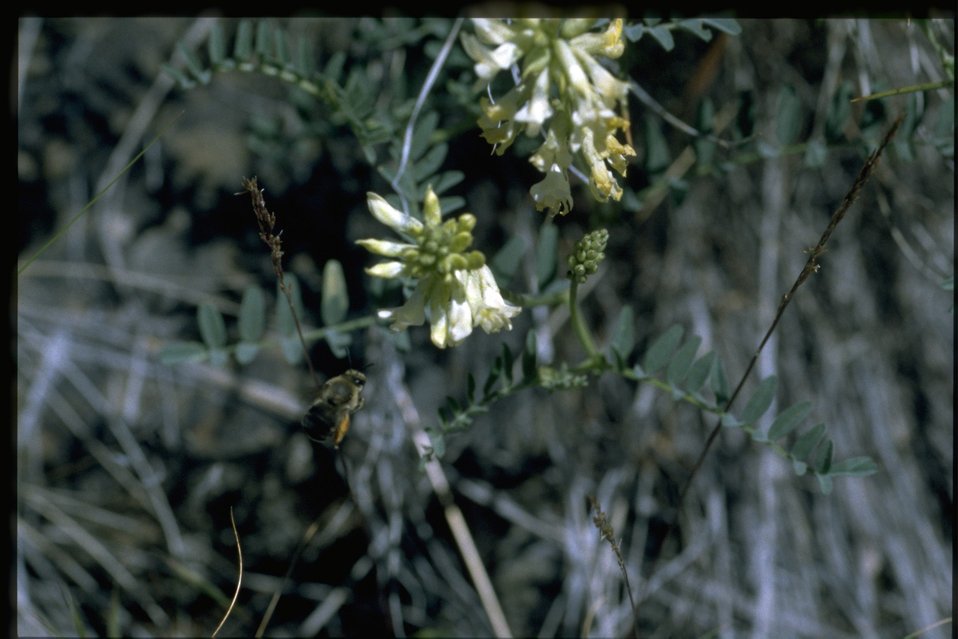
Medium shot of curvepod milkvetch (Astragalus curvicarpus).